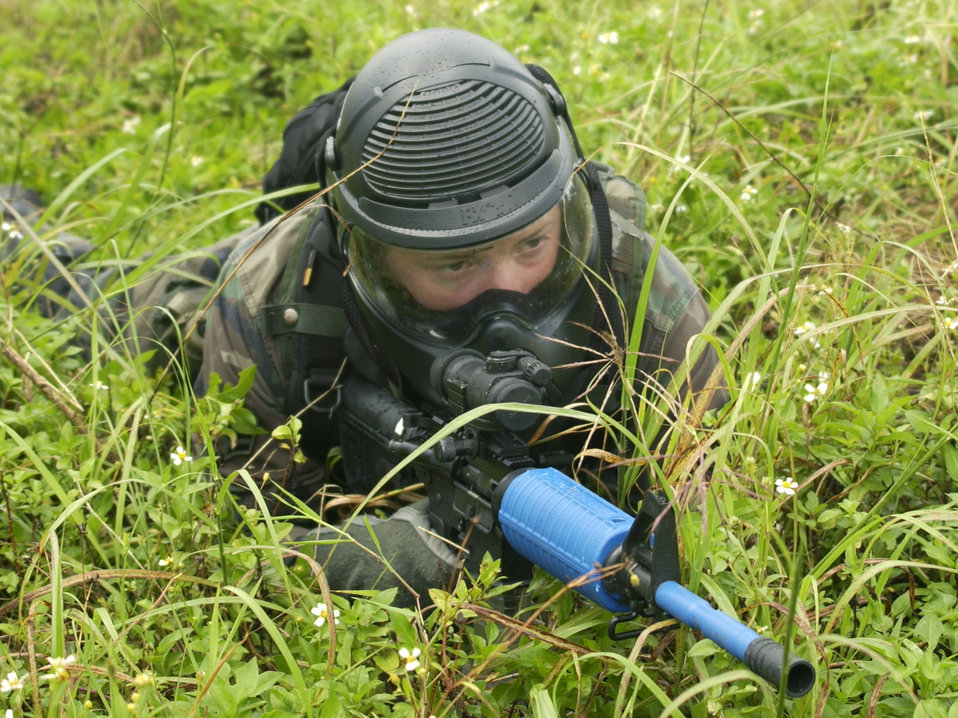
Evading enemy fire

ANDERSEN AIR FORCE BASE, Guam -- Senior Airmen John Miller evades enemy fire by taking cover while providing security during a convoy training exercise here Sept. 7. Airman Miller is a security forces member assigned to the 613th Contingency Response Group.